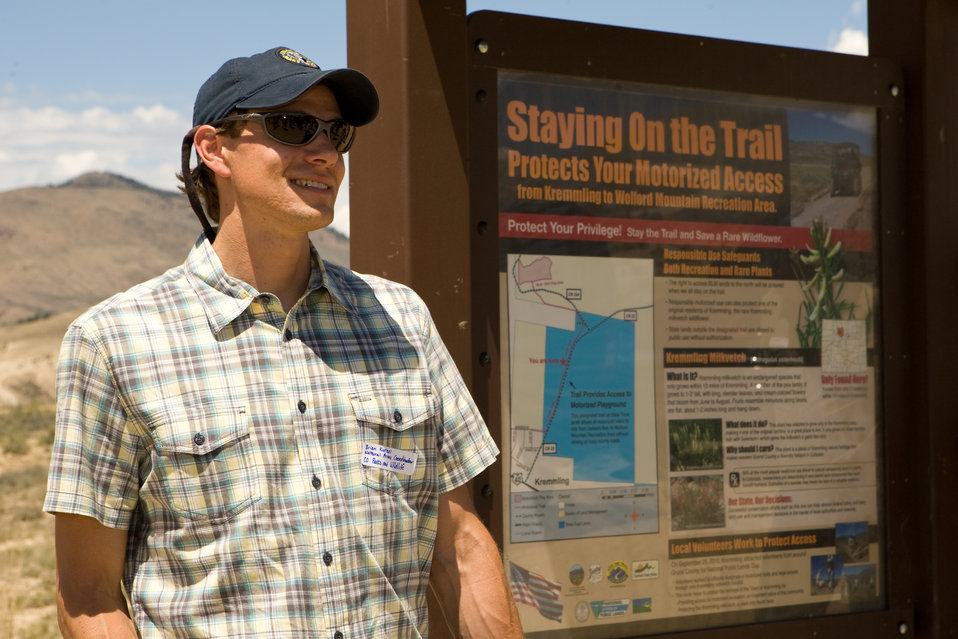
Natural Areas Program Kiosk in Kremmling

The Colorado Rare Plant Conservation Initiative (RPCI) is a partnership of 23 statewide and regional agencies, private organizations, and academic institutions working to conserve 121 rare plants in Colorado. As part of these efforts the group developed the Colorado Rare Plant Conservation Strategy, developed Best Management Practices to reduce energy development impacts, addressed climate change, and developed focused strategies for the conservation of individual species at eight priority landscapes. The group has also worked to coordinate volunteer efforts for plant conservation across the state.